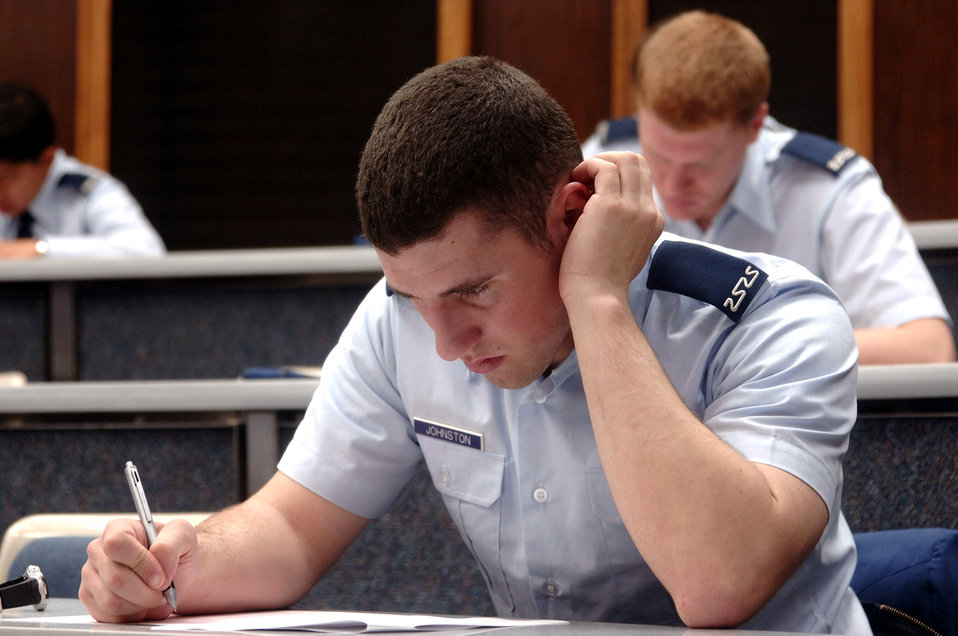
Life at the academy

Freshman Cadet Jacob Johnston takes the Military Knowledge Test during the Academy Cadet Wing Unit Compliance Inspection in April at the U.S. Air Force Academy.